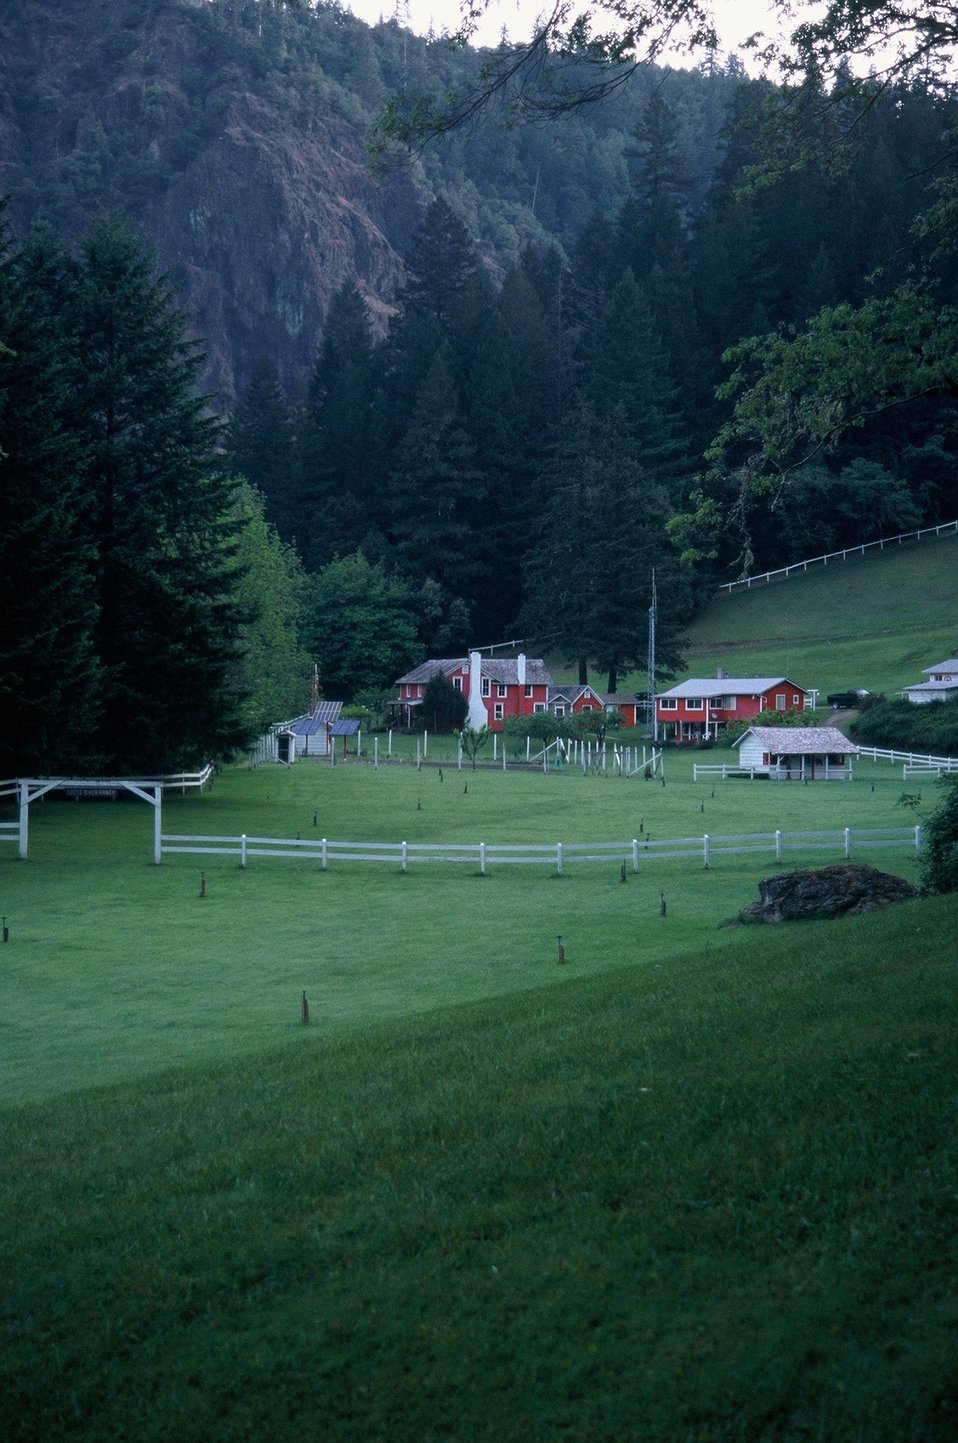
Wild section of the Rogue River from Grave Creek to Foster Bar May 19 to May 22.